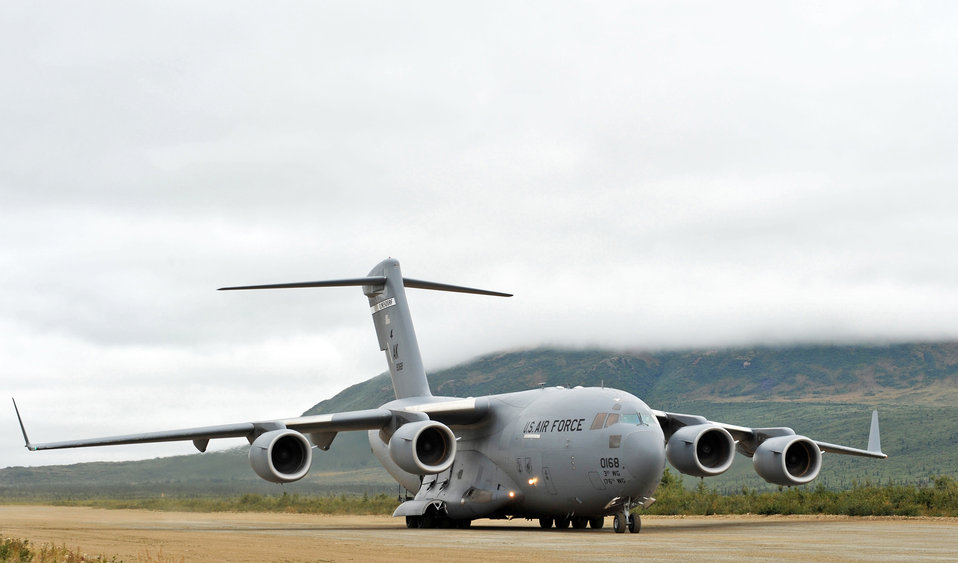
Elmendorf Airmen support Army's Operation Arctic Response

A C-17 Globemaster III from the 517th Airlift Squadron taxies down an dirt air strip Aug. 24 near Elmendorf Air Force Base, Alaska. The aircraft and its aircrews deployed 120 Soldiers from the 17th Combat Service Support Battalion on Fort Richardson, Alaska, to the airstrip during Operation Arctic Response.